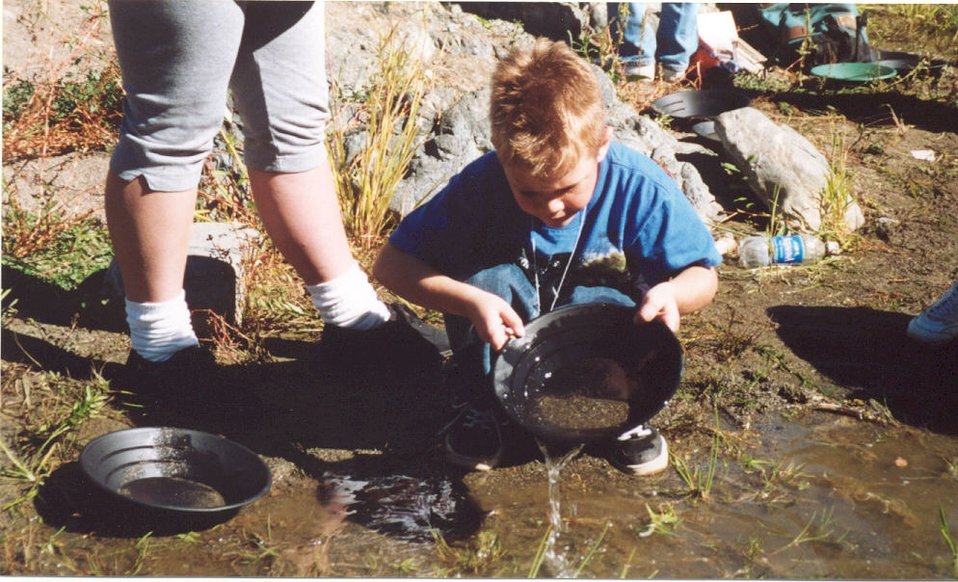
Public Lands Day goldpanning demonstration.